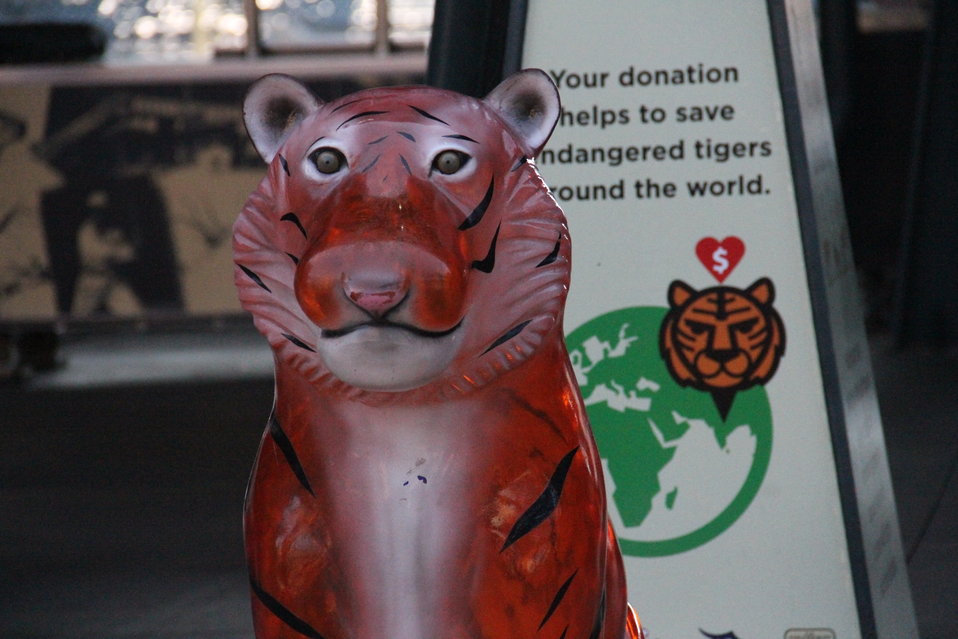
Pennies for Paws at Tigers Stadium